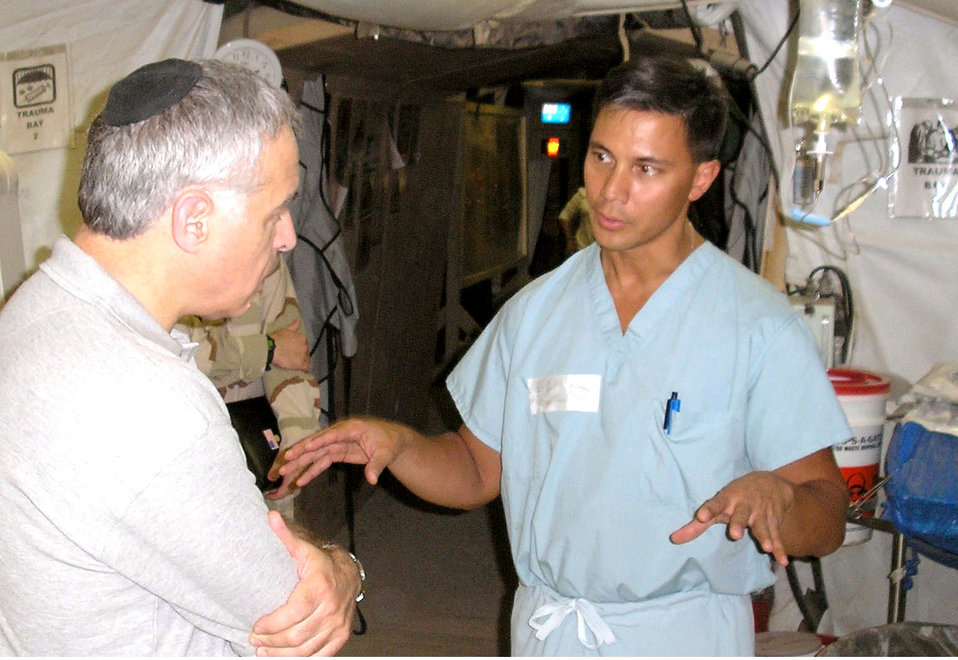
Rabbi uses Iraq trip to help shape AF vision, values

BALAD AIR BASE, Iraq -- Lt. Col. (Dr.) Mark Werner (right) discusses the Air Force Theater Hospital's mission with Rabbi Arnold E. Resnicoff during his visit here Aug. 11. The rabbi learned that the combat medical community has had to react to different kinds of wounds than in previous wars because of the types of enemy weapons used. Dr. Werner is the 332nd Expeditionary Medical Operations Squadron commander.